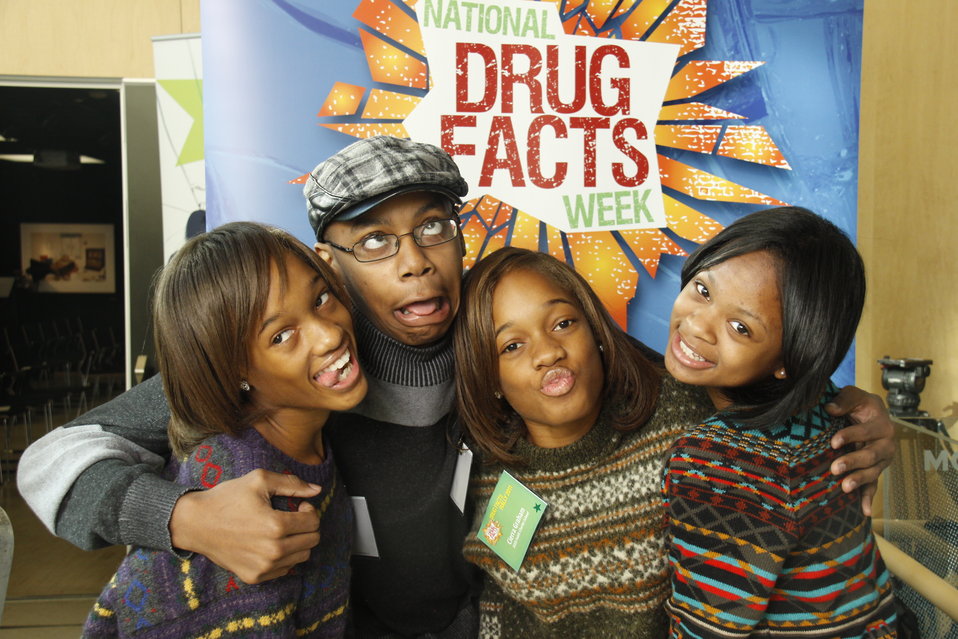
NDFW Mentor Event